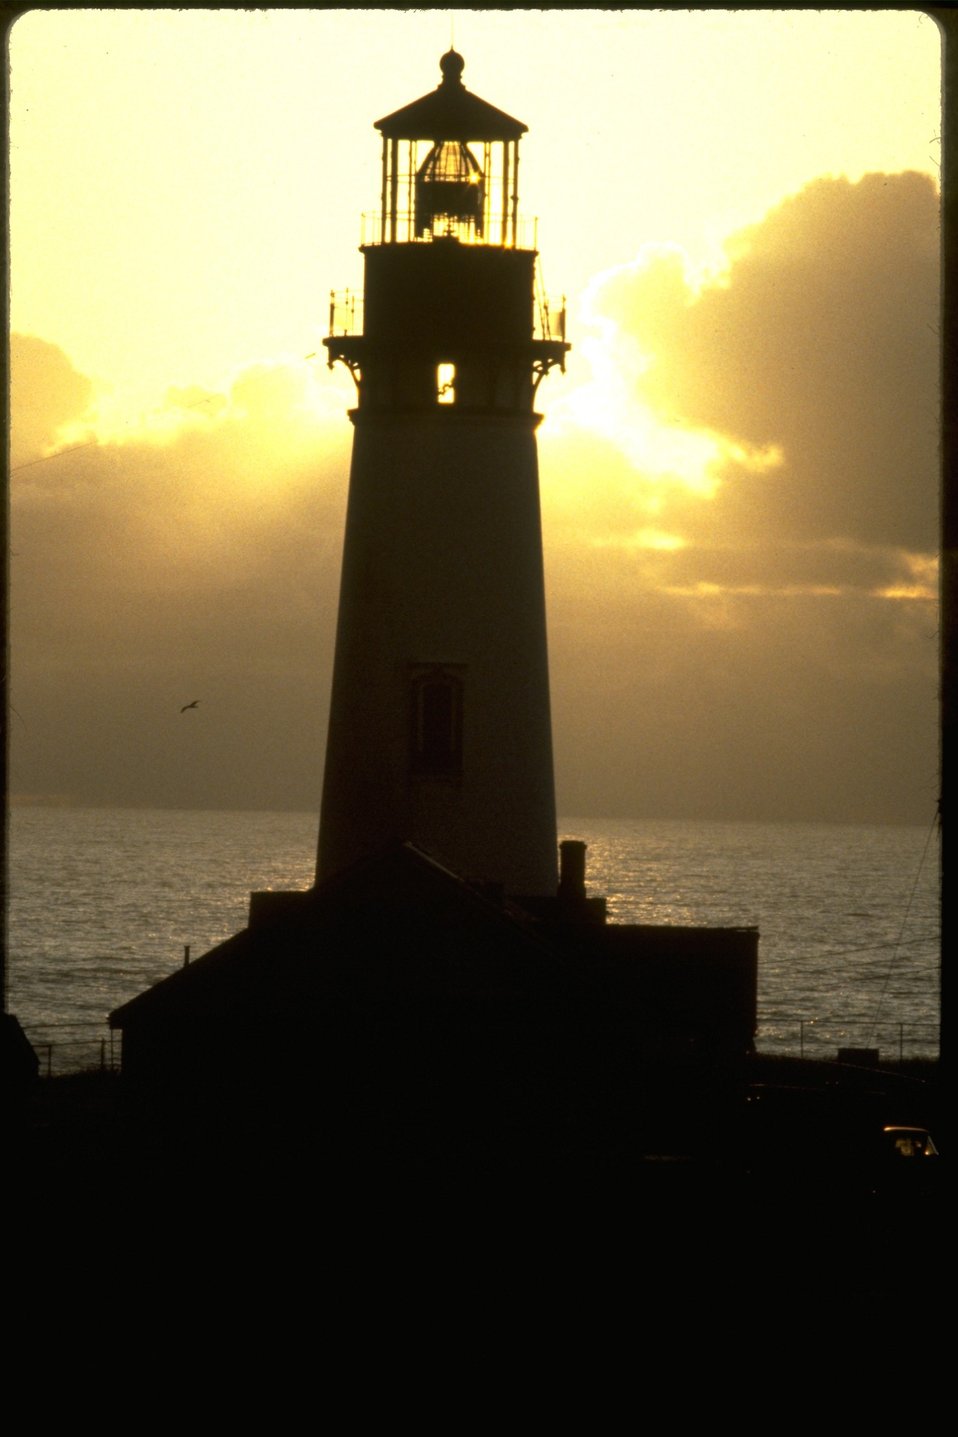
A scenic view of Yaquina Head Light House at sunset.